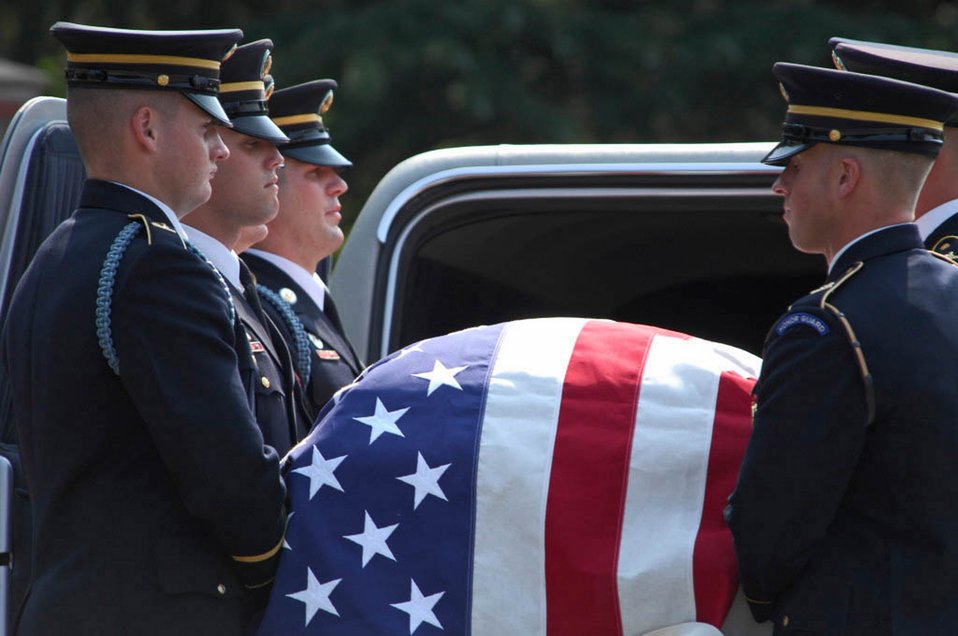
World War II B-24 pilot's remains laid to rest at Arlington

Army Color Guard members carry the casket of 2nd Lt. Harold E. Hoskin into the Fort Myer Old Post Chapel before the start of his funeral procession Sept. 7 at Arlington National Cemetery in Virginia. Lieutenant Hoskin was one of five men who were flying in a B-24 Liberator that crashed while on a test flight Dec. 21, 1943, out of Ladd Field in Fairbanks, Alaska. Lieutenant Hoskin's remains were discovered in August 2006 and identified in April 2007.